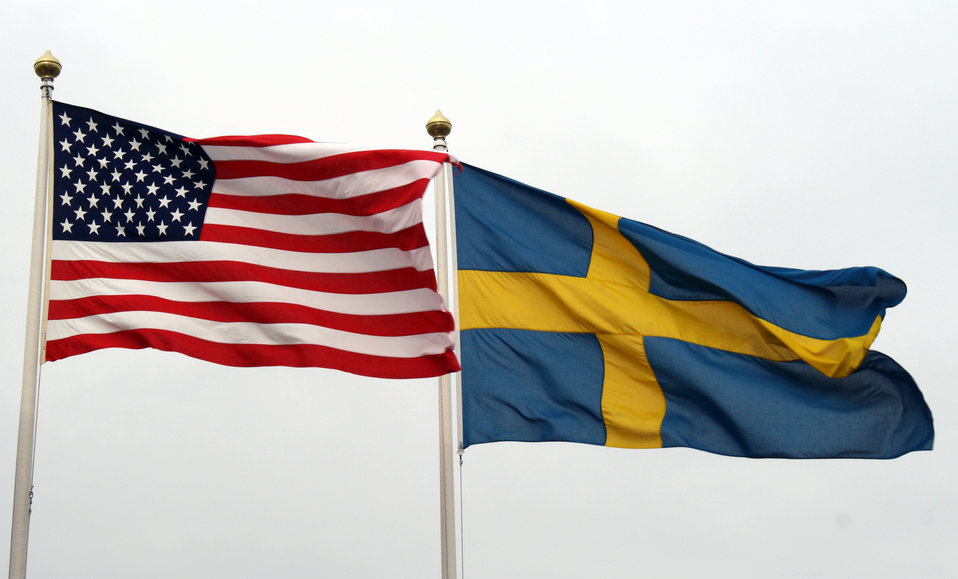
Secretary Kerry Arrives in Stockholm, Sweden

U.S. and Swedish flags fly alongside each other on May 14, 2013 as U.S. Secretary of State John Kerry arrives in Stockholm, Sweden, for meetings with Swedish officials.